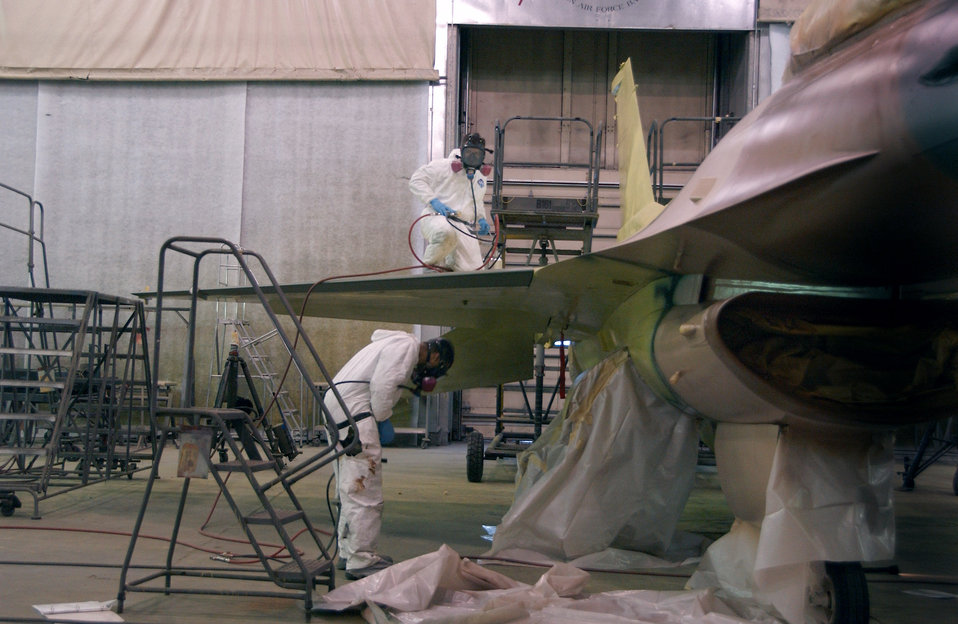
Fresh Coat For New Beginning

Senior Airman Frank Reardon and Airman 1st Class Eric Rickards apply a jungle theme to an F-16 Fighting Falcon Feb. 14 at the corrosion facility. With the swap of the F-16s from Kunsan Air Base, South Korea, to Eielson AFB in support of their new mission as aggressors, each aircraft is applied with a scheme being Arctic Flanker, Blue Flanker or a Lizard Flanker. Airmen Reardon and Rickards are 354th Maintenance Squadron sheet metal workers.